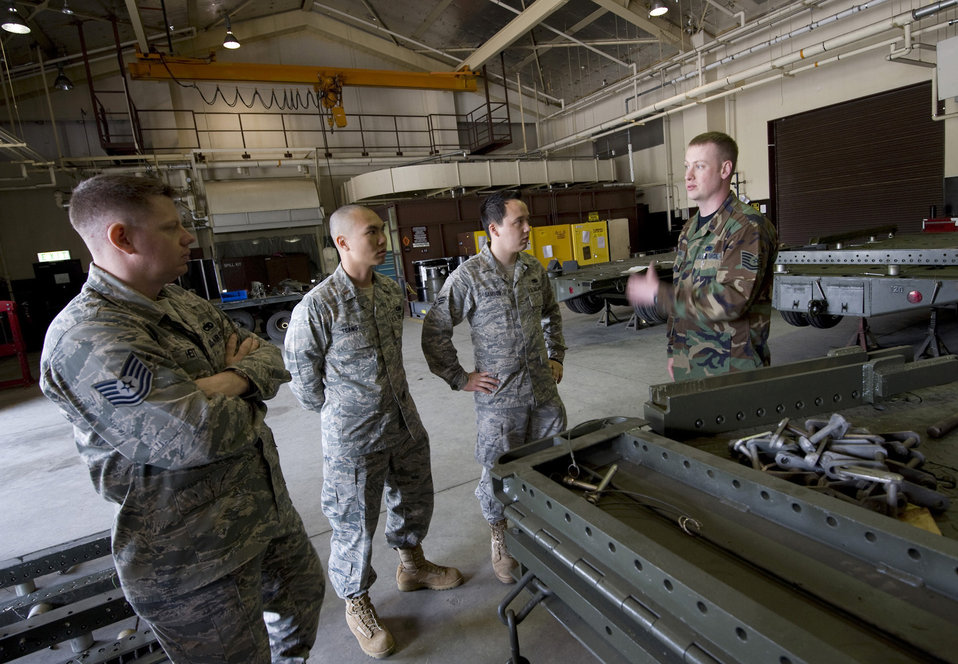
Misawa maintenance Airmen benefit from AFSO21 review

Tech. Sgt. Scot Solheim describes the process of inspecting and repairing trailers in the munitions support equipment element repair shop May 18, 2010, at Misawa Air Base, Japan. The munitions support equipment element held a four-day rapid improvement event that revamped their processes using the Air Force Smart Operations for the 21st Century model. Sergeant Solheim is the 35th Maintenance Squadron munitions flight munitions support equipment element chief.